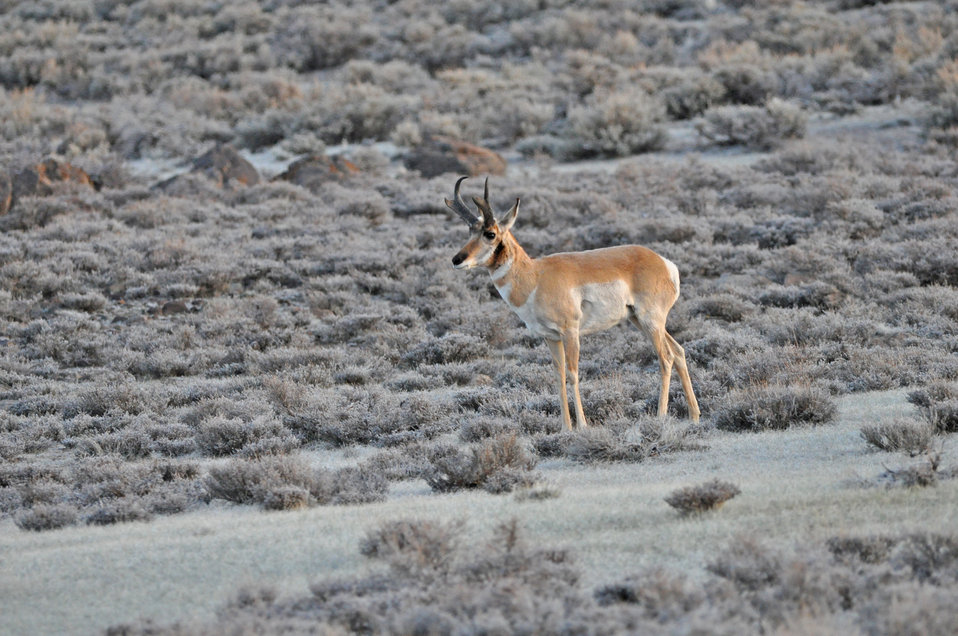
Pronghorn

Photo Credit: Jeannie Stafford/USFWS
Pronghorn (Antilocapra americana) are endemic to interior western and central North America. In North America they are commonly referred to as pronghorn antelope or simply antelope as it closely resembles the true antelopes of the Old World. They can run exceptionally fast and they are often cited as the second-fastest land animal, second only to the cheetah. This male was photographed at a greater sage-grouse lek near Bridgeport, CA.